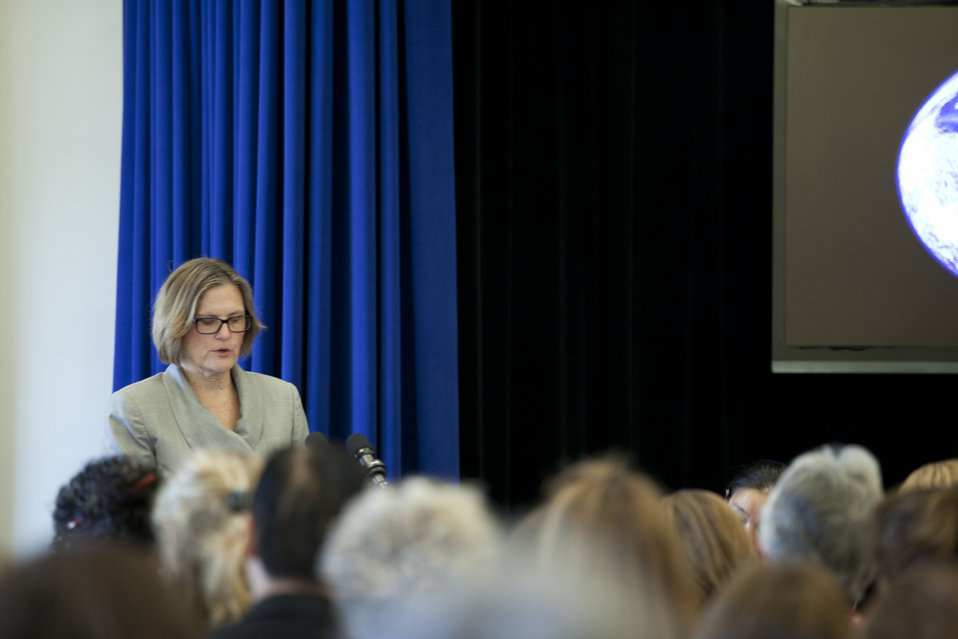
White House Leadership Summit on Women, Climate and Energy

Dr. Kathy Sullivan, former astronaut and Acting Administrator of the National Oceanic and Atmospheric Administration, took part on the first panel discussion of the day: Climate Science and Energy Solutions.